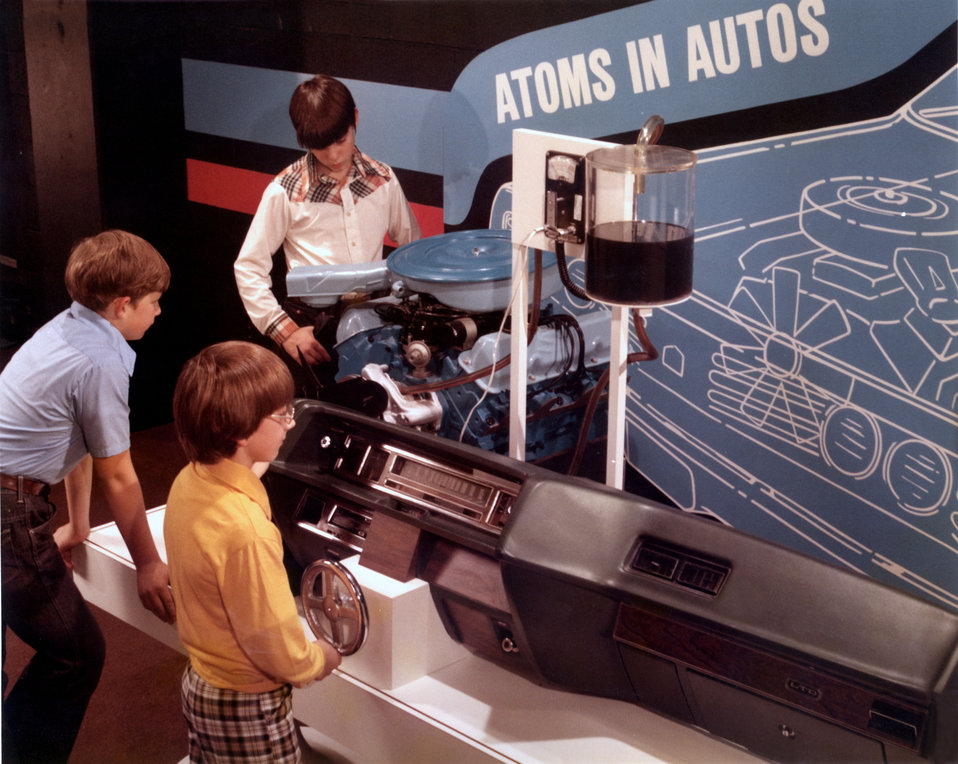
Exhibit at the American Museum of Science and 'Atoms in Autos' Oak Ridge

75-34-6 DOE photo by Frank Hoffman

Exhibit at the American Museum of Science and 'Atoms in Autos' Oak Ridge Tennessee Jan. 1975